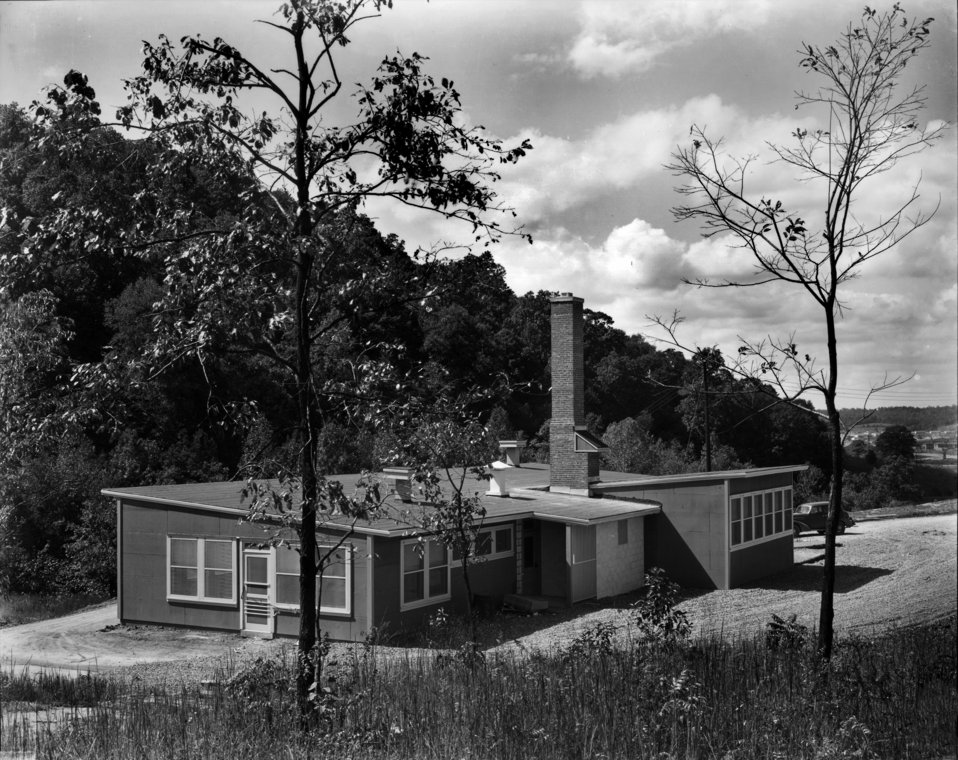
Clinton Engineering Work Hostess House Oak Ridge

MED 169 DOE photo by Ed Westcott 1944 Oak Ridge Tennessee